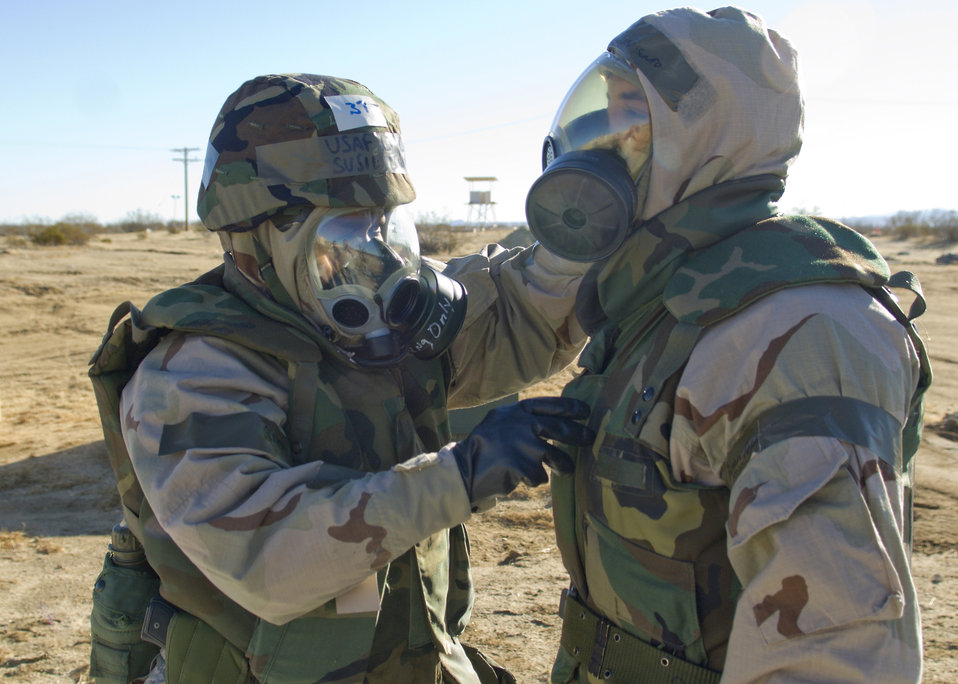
Looks good!

Lt. Col. Susie Lewis performs a buddy check of a fellow Airman's chemical suit during an operational readiness exercise Jan. 28, 2010, at Edwards Air Force Base, Calif. Colonel Lewis is the 95th Force Support Squadron commander.